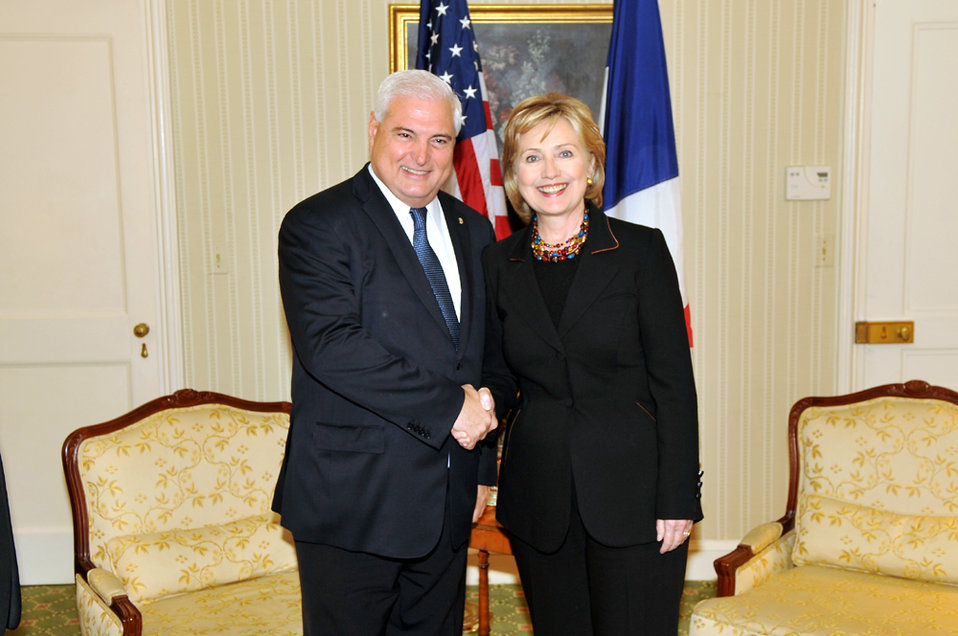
UNGA 2009: Secretary Clinton Meets With Panamanian President

U.S. Secretary of State Hillary Rodham Clinton meets with Panamanian President Ricardo Martinelli at the Waldorf Astoria hotel in New York City, New York September 26, 2009.